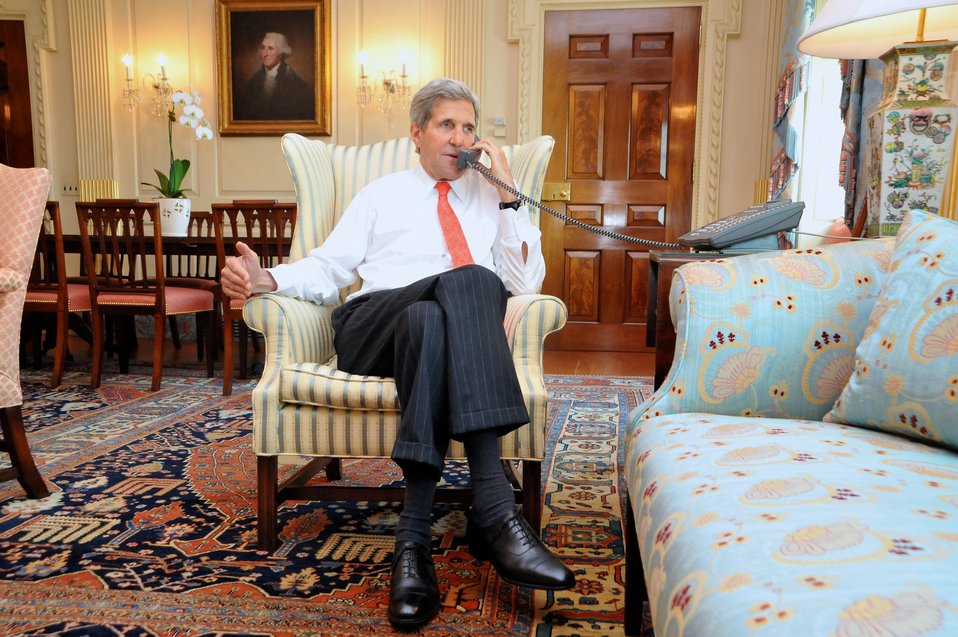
Secretary Kerry Speaks With UK Foreign Secretary Hague About Ukraine

U.S. Secretary of State John Kerry speaks with British Foreign Secretary William Hague during a series of calls to allies focused on Ukraine, at the U.S. Department of State in Washington, D.C., on April 25, 2014.